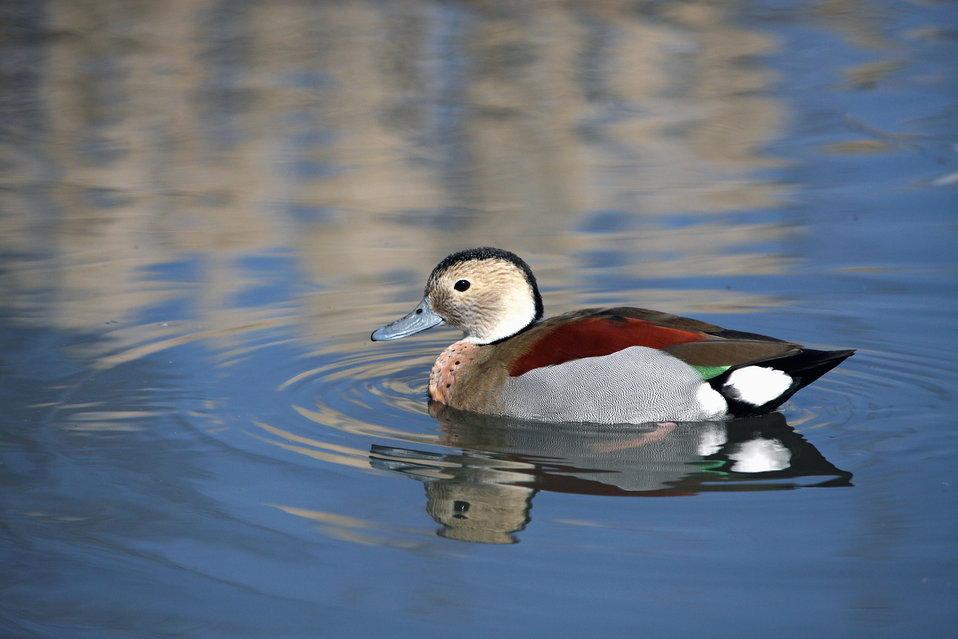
Duck ringed teal

Beautiful photo of a ringed teal duck on the blue water.